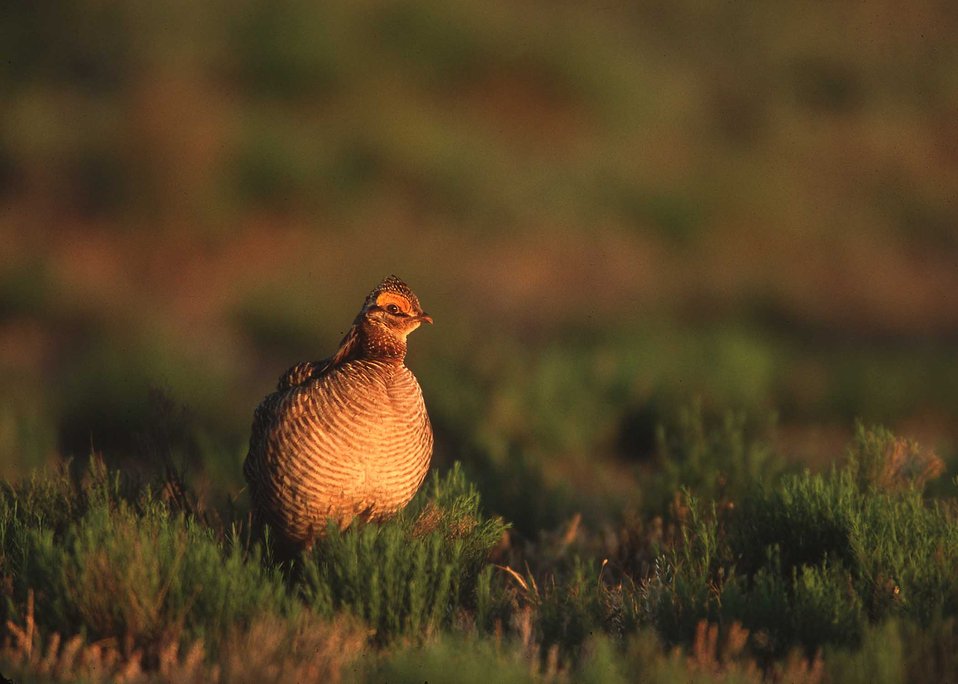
Lesser prairie chicken in Eastern New Mexico.